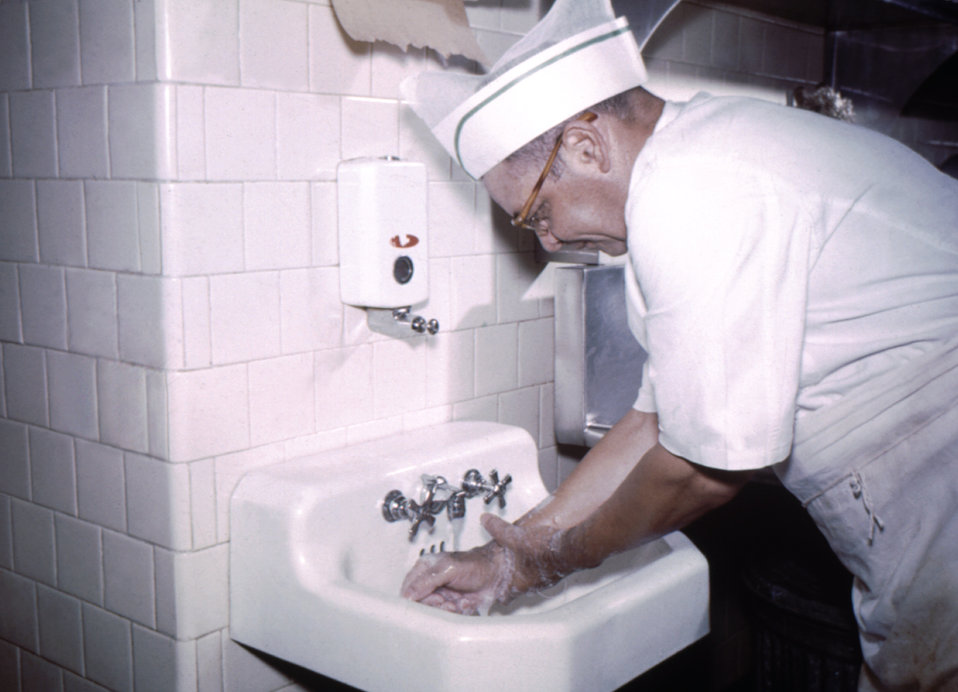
This photograph shows a migrant labor camp chef washing his hands before he ever directly handles food during its preparation.